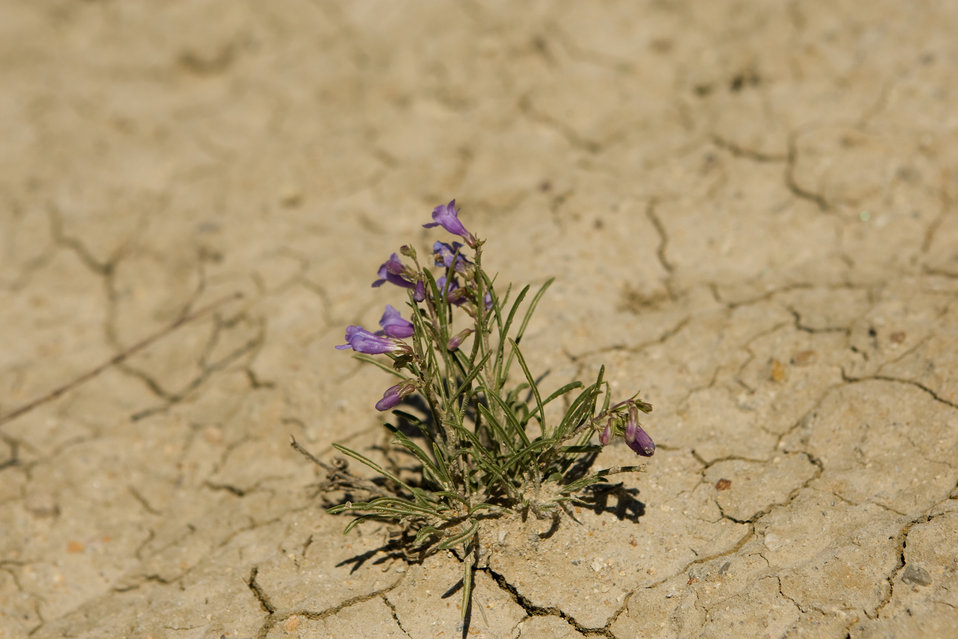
Colorado Rare Plant Conservation Initiative

The Colorado Rare Plant Conservation Initiative (RPCI) is a partnership of 23 statewide and regional agencies, private organizations, and academic institutions working to conserve 121 rare plants in Colorado. As part of these efforts the group developed the Colorado Rare Plant Conservation Strategy, developed Best Management Practices to reduce energy development impacts, addressed climate change, and developed focused strategies for the conservation of individual species at eight priority landscapes. The group has also worked to coordinate volunteer efforts for plant conservation across the state.